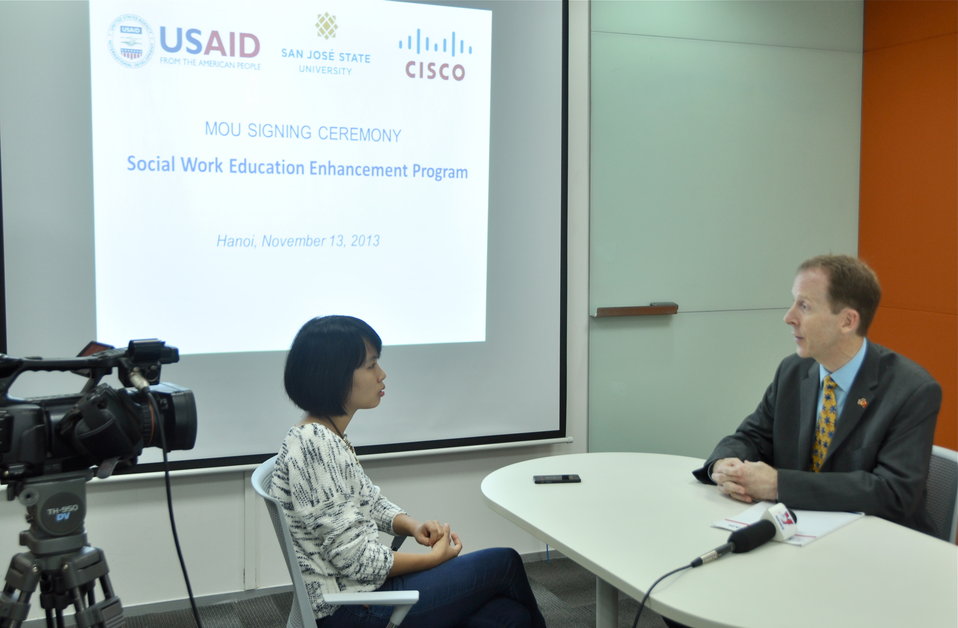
USAID Mission Director Joakim Parker answers interview questions from Vietnam News Agency (VNA) Television.

Hanoi, November 13, 2013.